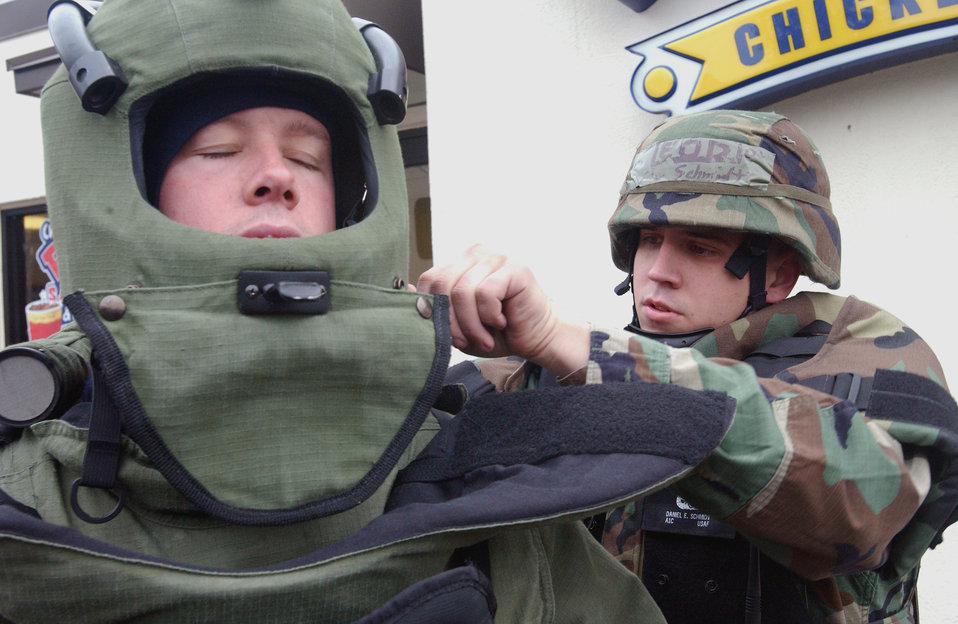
Nonexplosive situation

SPANGDAHLEM AIR BASE, Germany -- Airman 1st Class Daniel Schmidt (right) helps Senior Airman Jason Harrison into his bomb suit before entering the post office here to investigate a package Oct. 27. The explosive ordnance disposal inspection determined the package contained nothing harmful. Base postal workers are trained to notice and report suspicious packages. Both airmen are assigned to the 52nd Civil Engineer Squadron's EOD flight.